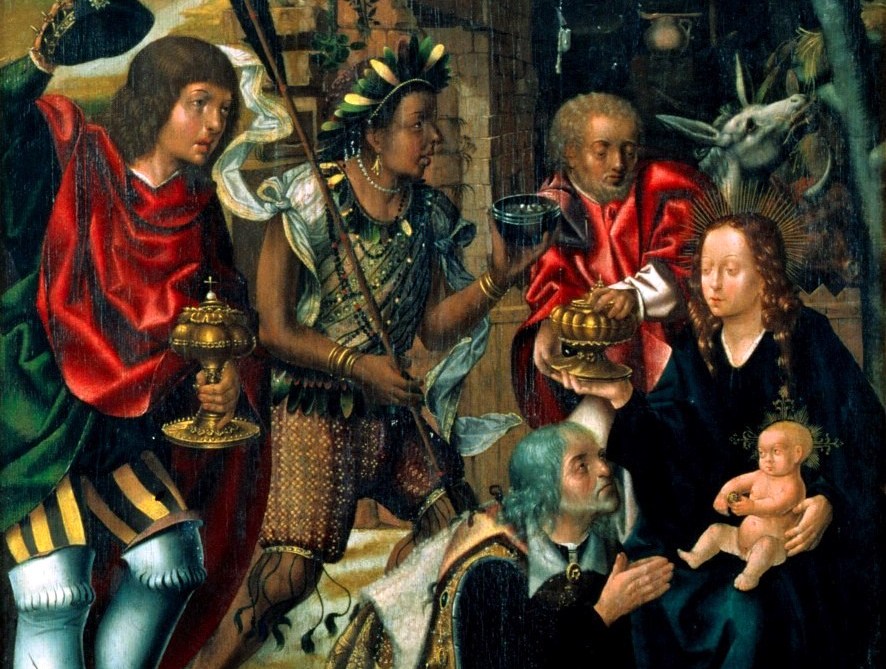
Adoração dos Reis Magos (pormenor)